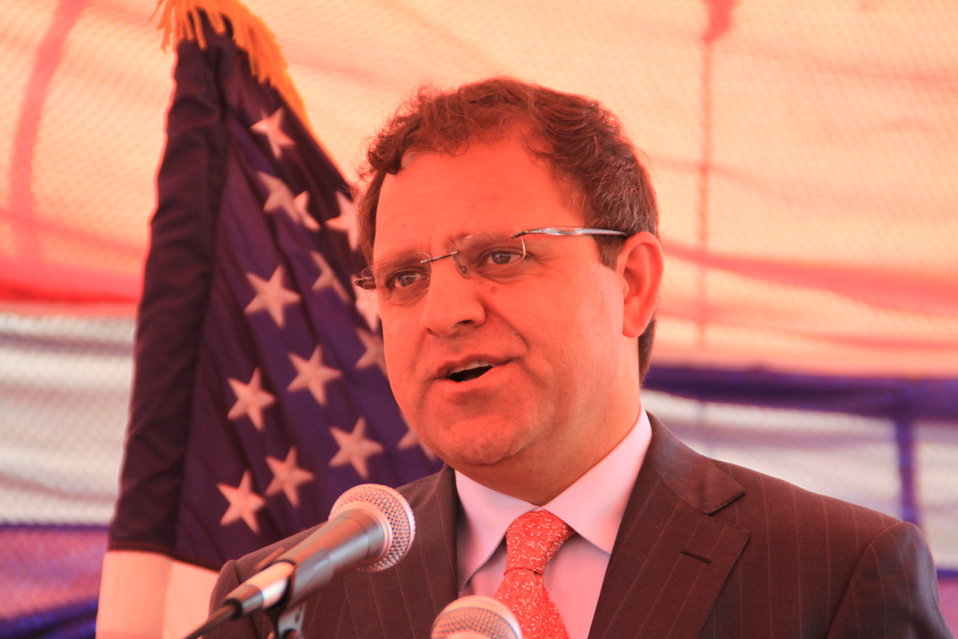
Badam Bagh Farm